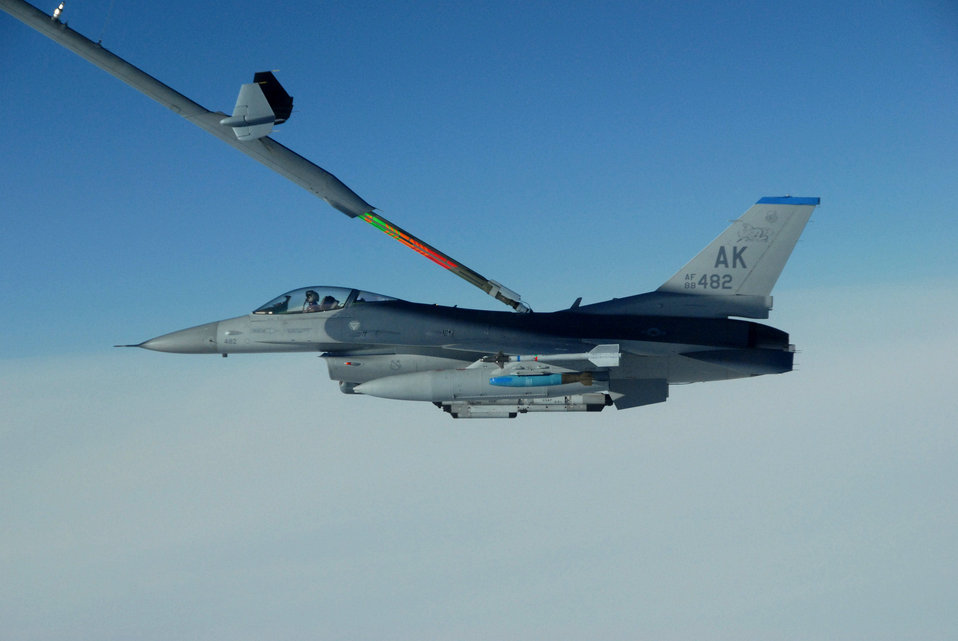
Eielson pilots get aggressive aircraft during Red Flag-Alaska

Capt. Jeremy Wimer positions an F-16 Fighting Falcon to be refueled behind a KC-10 Extender April 13 over the Pacific Alaska Range Complex during Red Flag-Alaska 07-1. Red Flag-Alaska is a Pacific Air Forces-directed field training exercise flown under simulated air combat conditions. Captain Wimer is a pilot from the 18th Fighter Squadron from Eielson AFB.